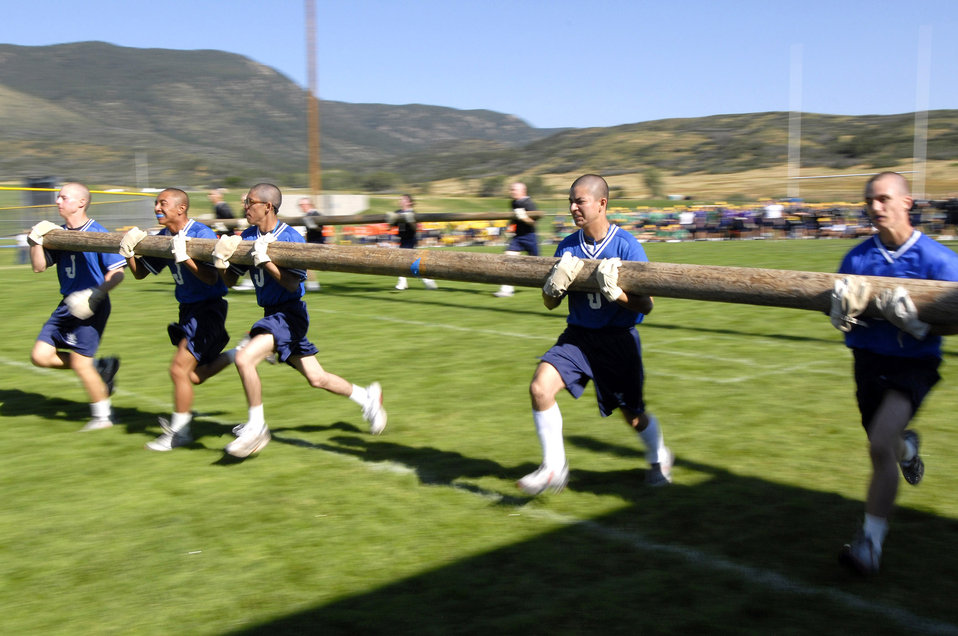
Cadets team up at field day

A team of basic cadet trainees strain as they sprint across the field in the pole-carry event during Field Day July 14 at the U.S. Air Force Academy in Colorado. New cadets are in their first month of training at the Academy and are learning honor, discipline and integrity in addition to physical fitness.